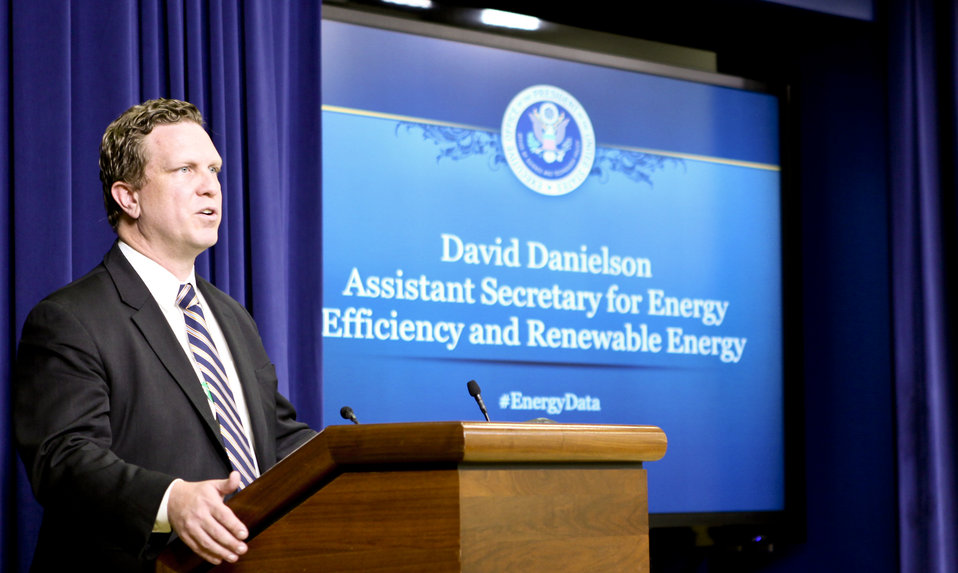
Assistant Secretary Dave Danielson speaking at the Energy Datapalooza